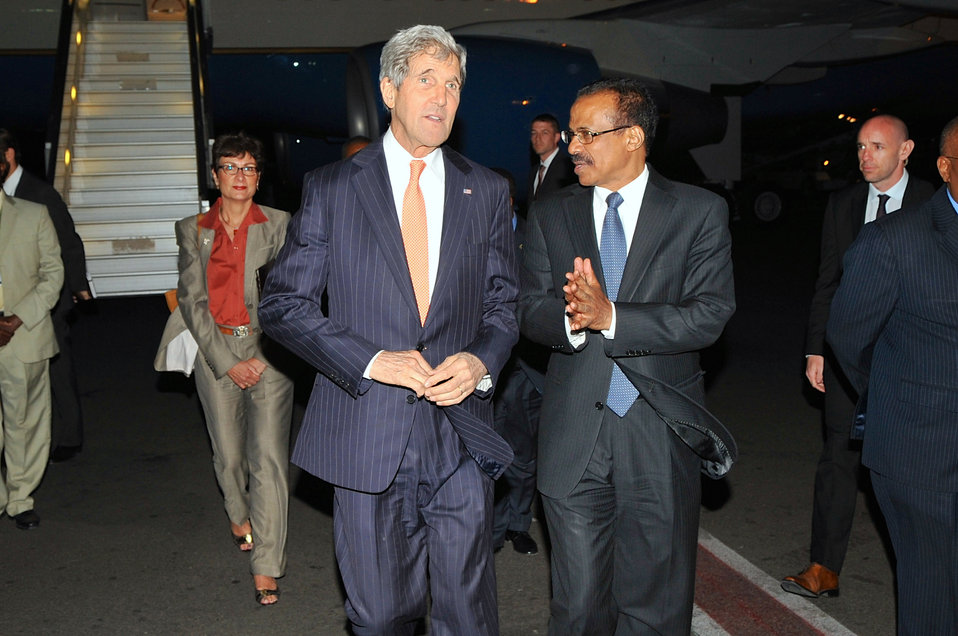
Ethiopian Ambassador Berhane Gebre-Christos and Ambassador Haslach Escort Secretary Kerry Upon Arrival in Ethiopia

Ethiopian State Minister for Foreign Affairs, Ambassador Berhane Gebre-Christos and U.S. Ambassador to Ethiopia Patricia Haslach escort U.S. Secretary of State John Kerry after his arrival in Addis Ababa, Ethiopia, on April 30, 2014, to begin a six-day African tour.